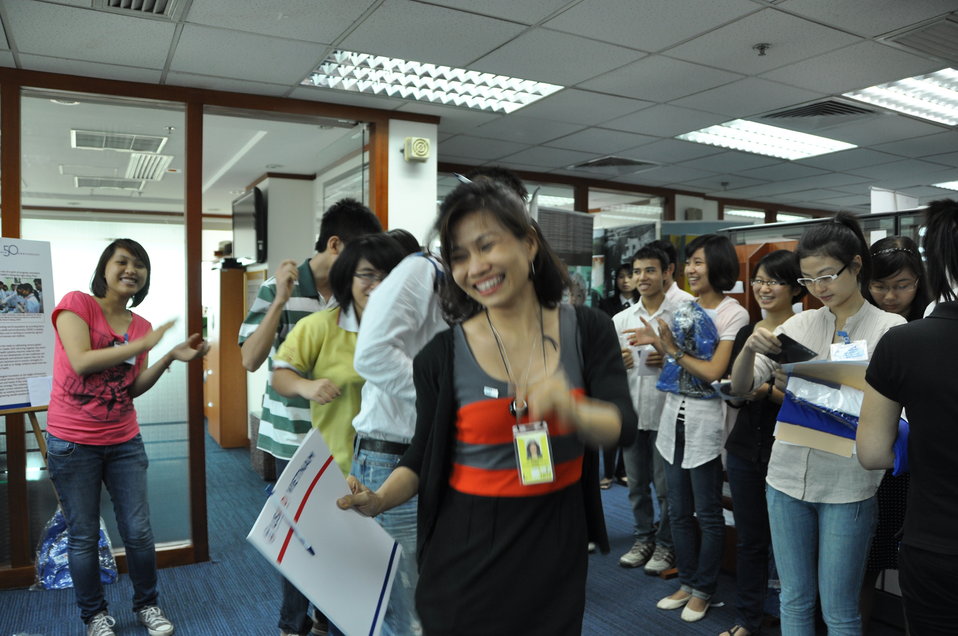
USAID Vietnam Open House 50th Anniversary, Hanoi